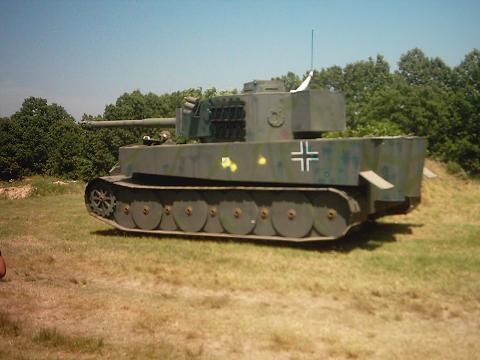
Health's Tiger Tank